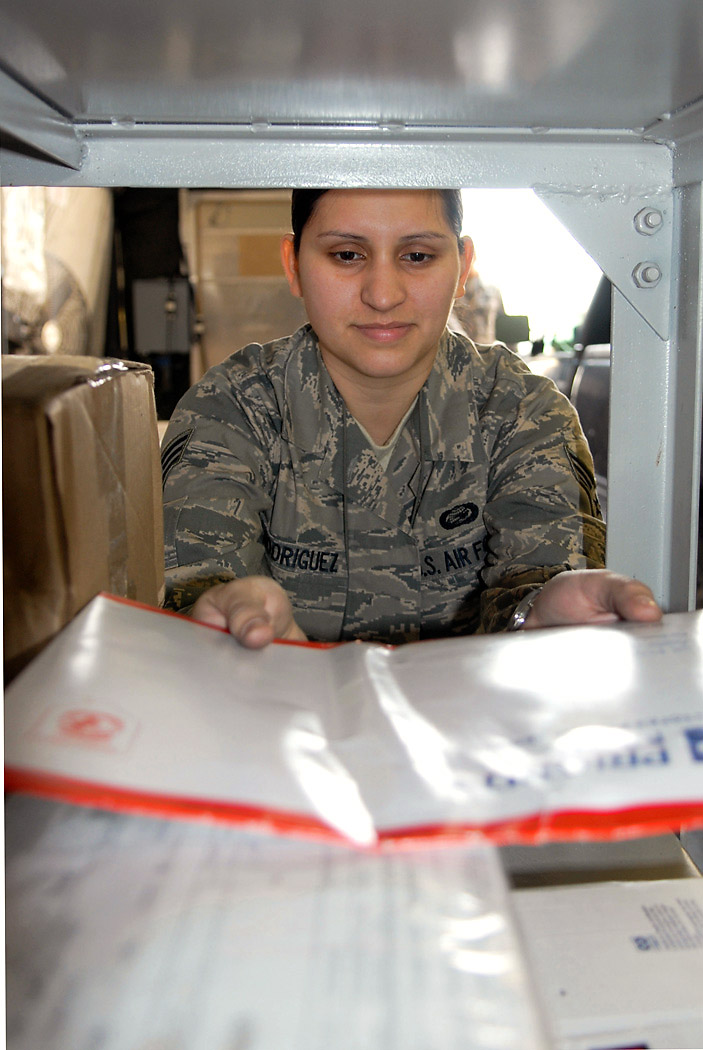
Teamwork helps Manas handle holiday season mail surge

Senior Airman Yolanda Rodriguez volunteers to sort mail Nov. 18 at Manas Air Base Kyrgyzstan. Between Thanksgiving and the first week of January, the Manas AB Post Office will receive roughly 4,400 pounds of mail every other day until the end of the holiday season. Airman Rodriguez is assigned to the 376th Expeditionary Force Support Squadron.